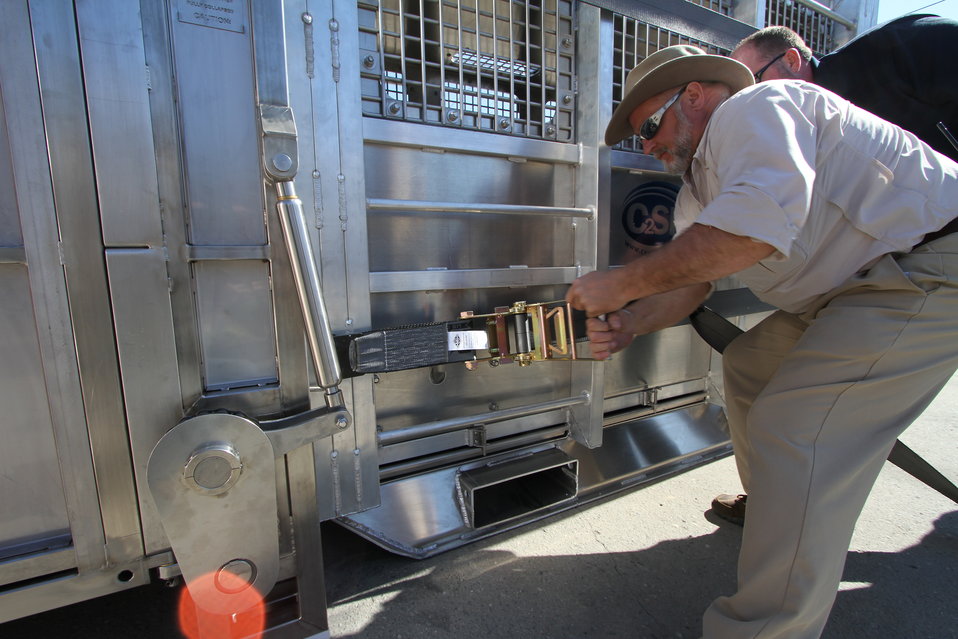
Polar bear holding module being set up at the Alaska Zoo before being shipped north. USFWS/Katrina Mueller